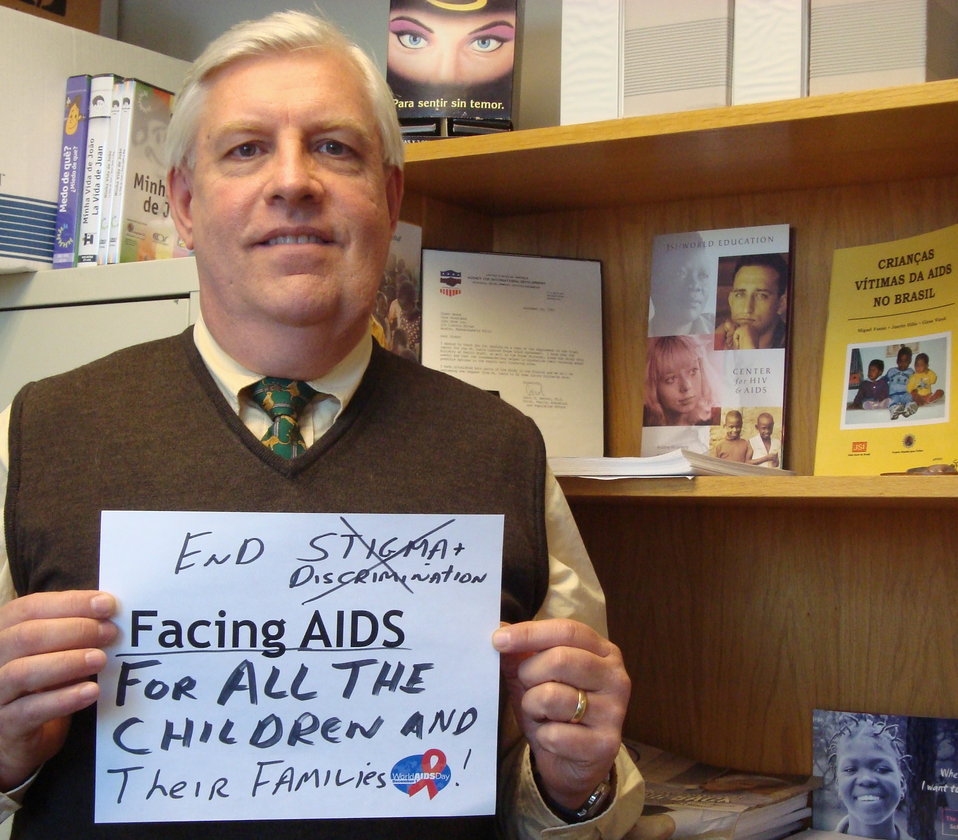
FacingAIDSCampaign 064

'Facings AIDS for all the children and their families!'